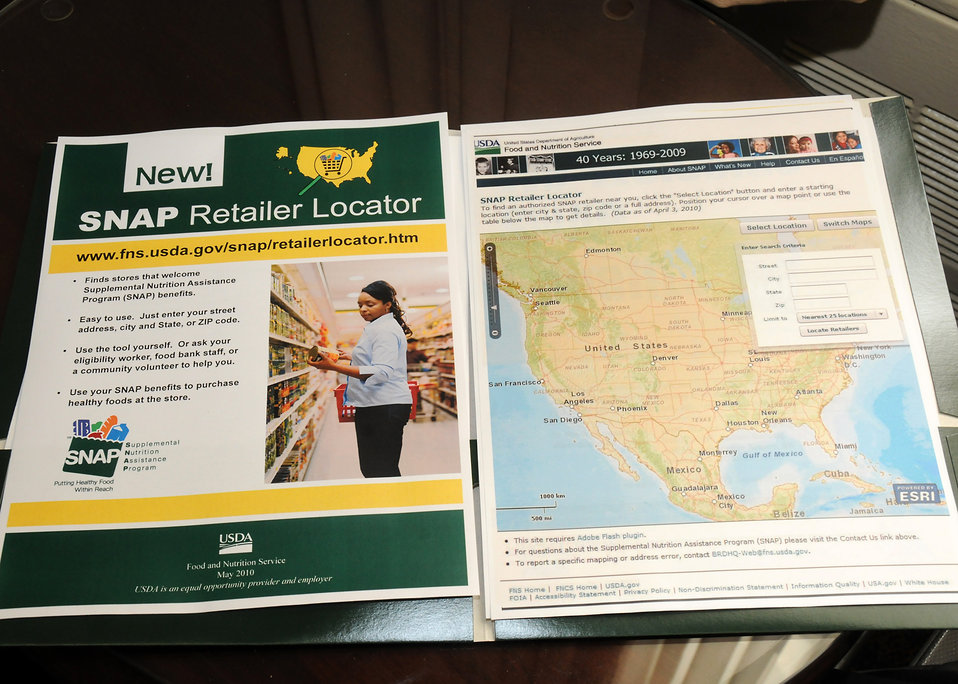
The new Supplemental Nutrition Assistance Program SNAP Retail Locator web tool announced on Wednesday, May 19, 2010, at the Department of Agriculture in Washington, D.C. USDA photo 10di1363-52